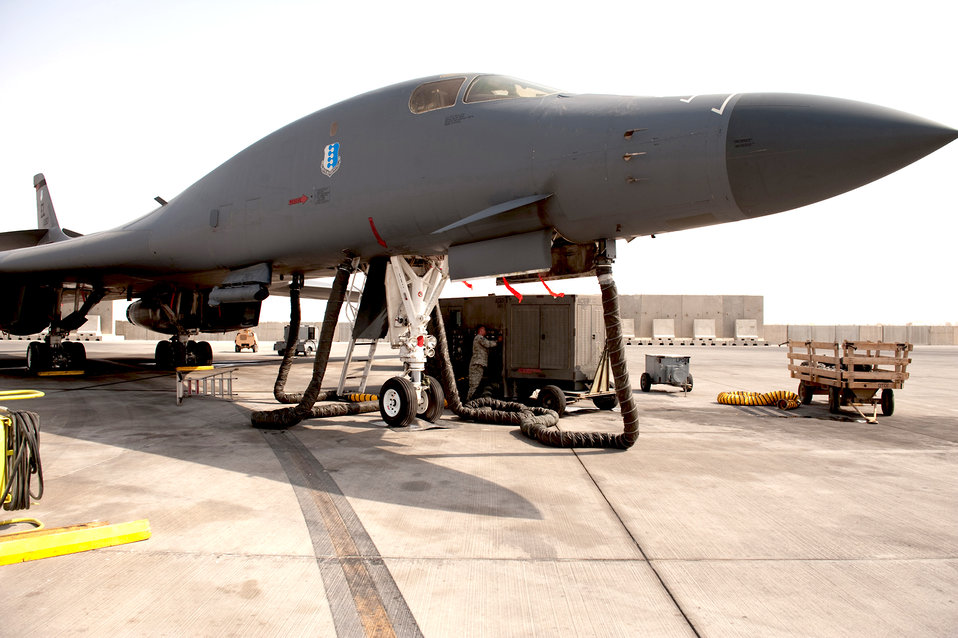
Innovative Airmen make jobs, lives easier

Tech. Sgt. Jesse Maddox installs a splitter on an air conditioner unit Aug. 26 at an undisclosed location in Southwest Asia. Sergeant Maddox, along with his co-workers, designed and manufactured a custom splitter that limits the number of air conditioning units supporting a B-1B Lancer from multiple units down to a single unit. Sergeant Maddox is a 379th Expeditionary Maintenance Squadron metals technology floor supervisor and is deployed from Ellsworth Air Force Base, S.D.